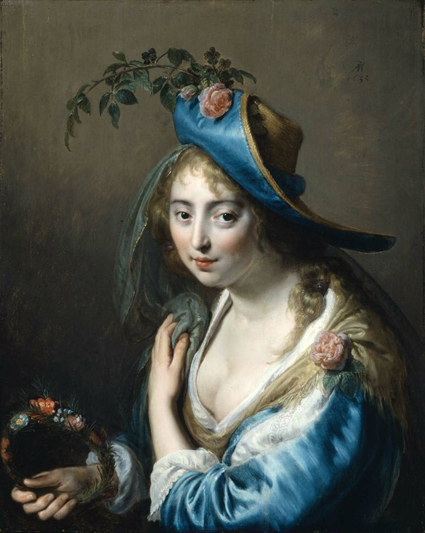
Moreelse, Paulus - Mythological Portrait - 1633